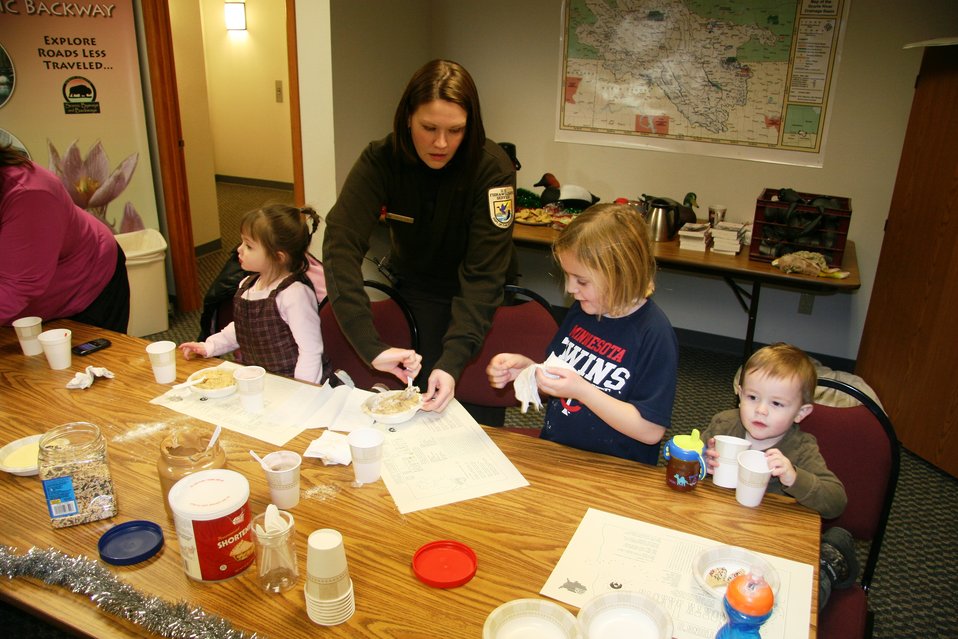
CBC4kids

Participants from age 2 to 12 took part in the first CBC4Kids at Des Lacs Refuge. Everyone took home a soda pop bottle feeder and bird feeder and birding information/pamphlets.